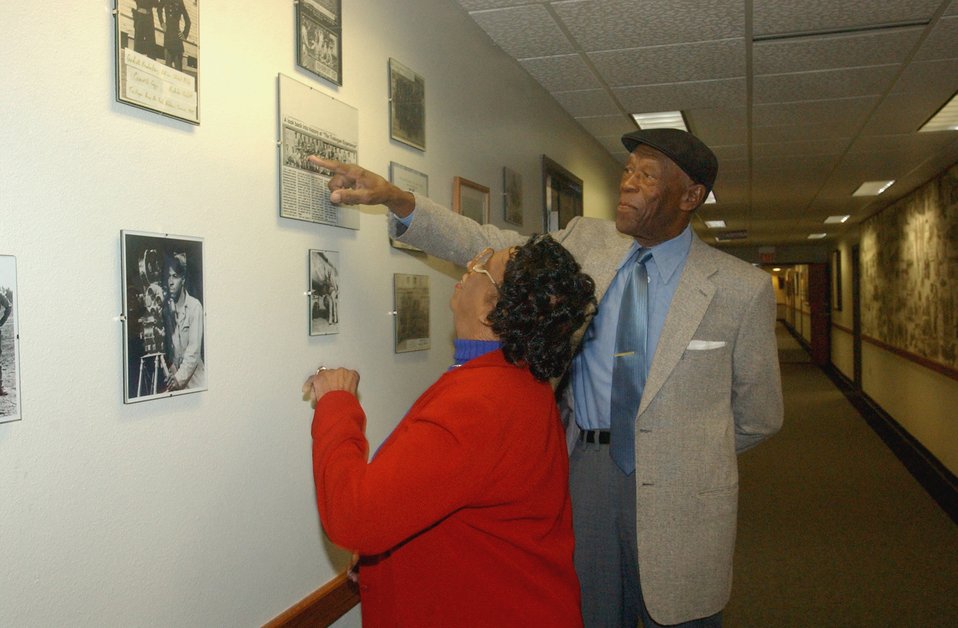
Tuskegee Airman visits former unit

RANDOLPH AIR FORCE BASE, Texas (AFPN) -- John Miles shows his friend Mildred Jones a photo he is in at the 99th Flying Training Squadron. He recently visited the unit he was assigned to in the 1940s.